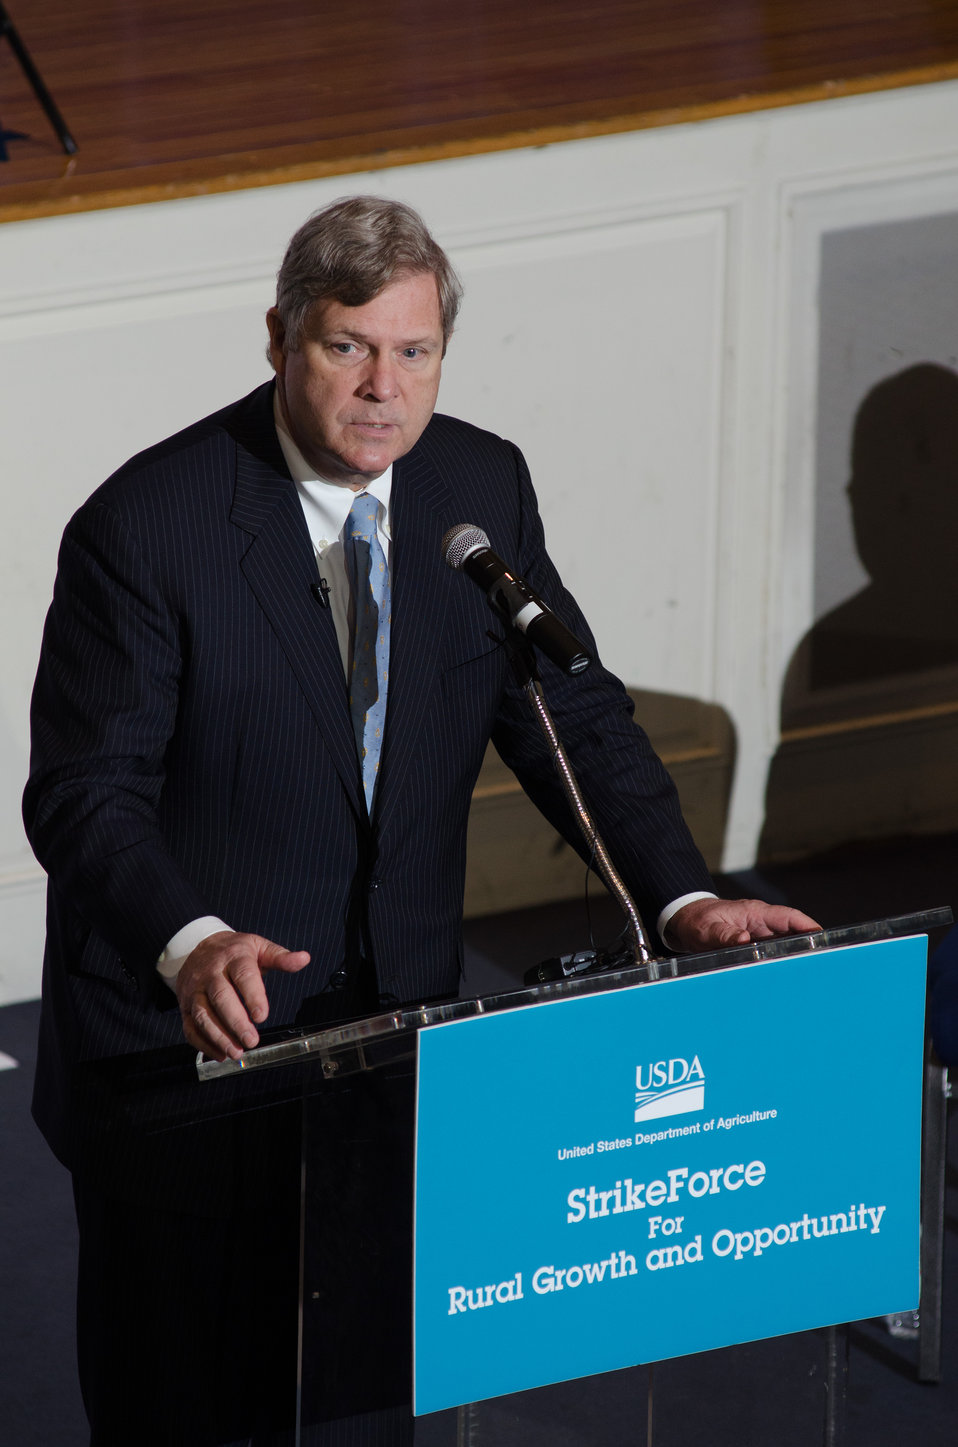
Agriculture Secretary Tom Vilsack speaks at the U.S. Department of Agriculture's (USDA) Strike Force for Rural Growth and Opportunity event held at Voorhees College in Denmark, SC, on Tuesday, March 26, 2013. The primary goal of the Strike Force initiative is to increase partnership with rural communities and leverage community resources in targeted, persistent poverty areas. Secretary Vilsack noted that through the StrikeForce initiative, USDA will do more to partner with local and state governments and community organizations on projects that promote economic development and job creation.